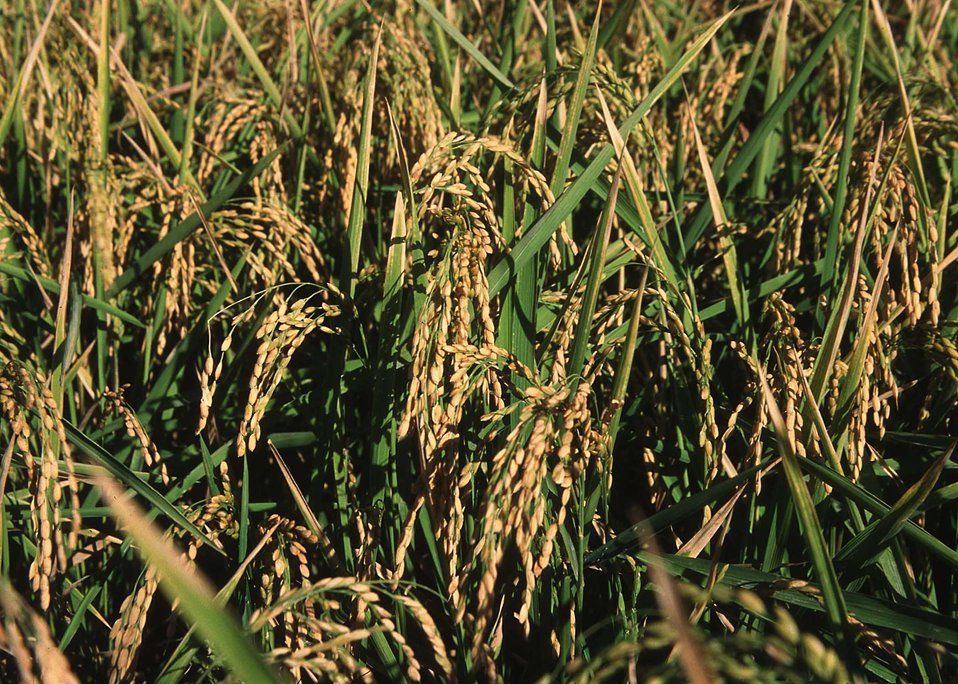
Rice field in Northern California.